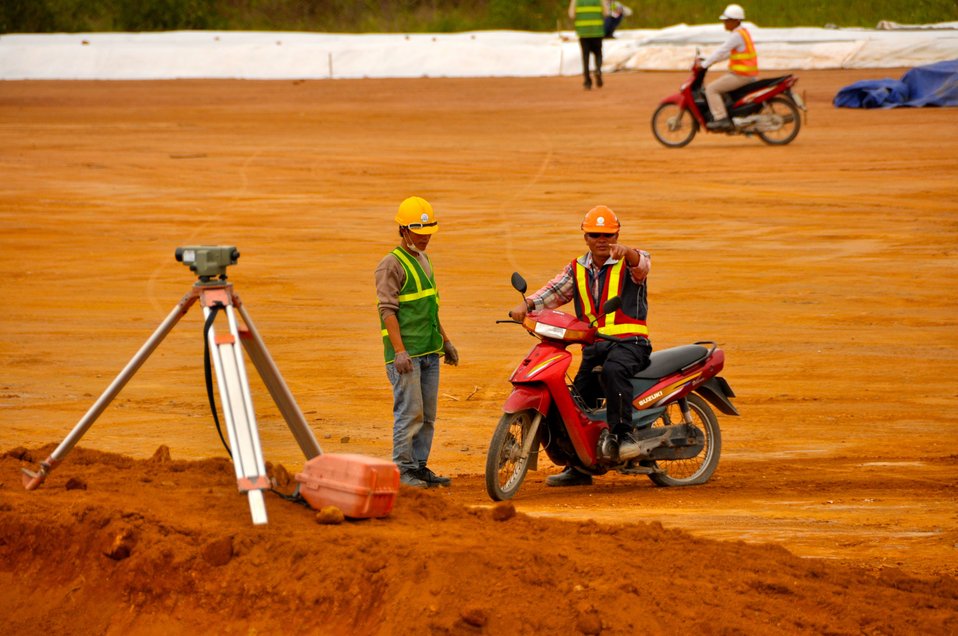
Site Preparation for Environmental Remediation of Dioxin Contamination at Danang Airport

Danang Airport, January 22, 2013